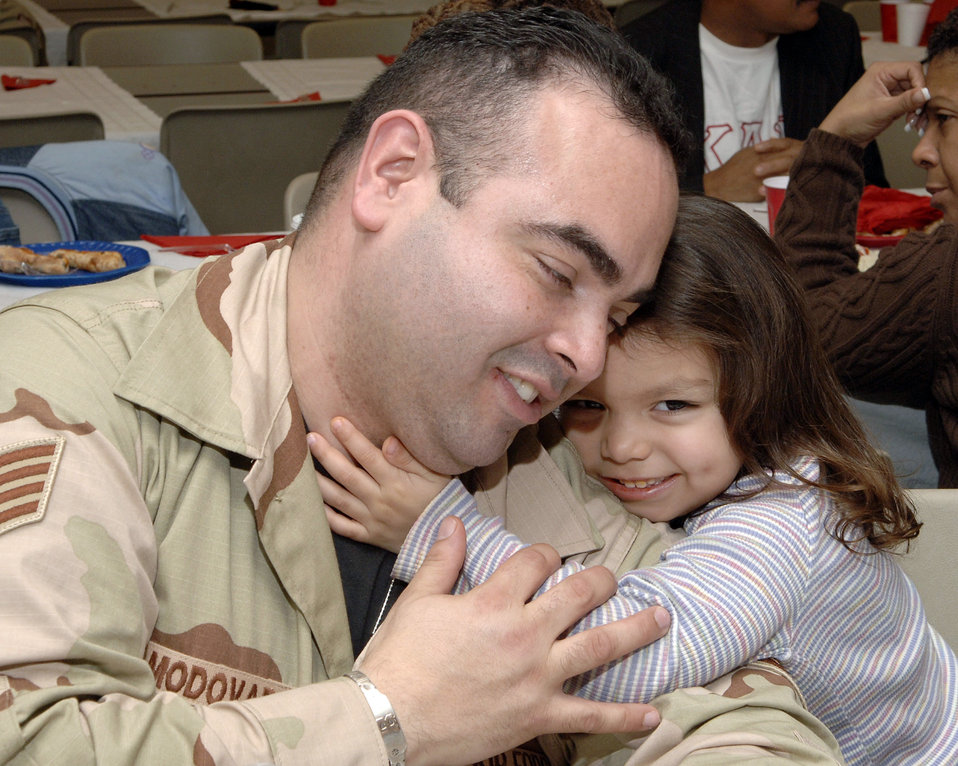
Saying goodbye

MCGUIRE AIR FORCE BASE, N.J. (AFPN) -- Staff Sgt. Benjamin Almodovar hugs his niece, Kaitlyn Tirado, during a farewell luncheon Jan. 23 before deploying. Sergeant Almodovar is assigned to the 88th Aerial Port Squadron here. His niece is the daughter of Staff Sgt. Edwin Tirado, also assigned to the squadron. Fourteen Airmen from the 88th and 35th APS deployed to Afghanistan for 120 days.